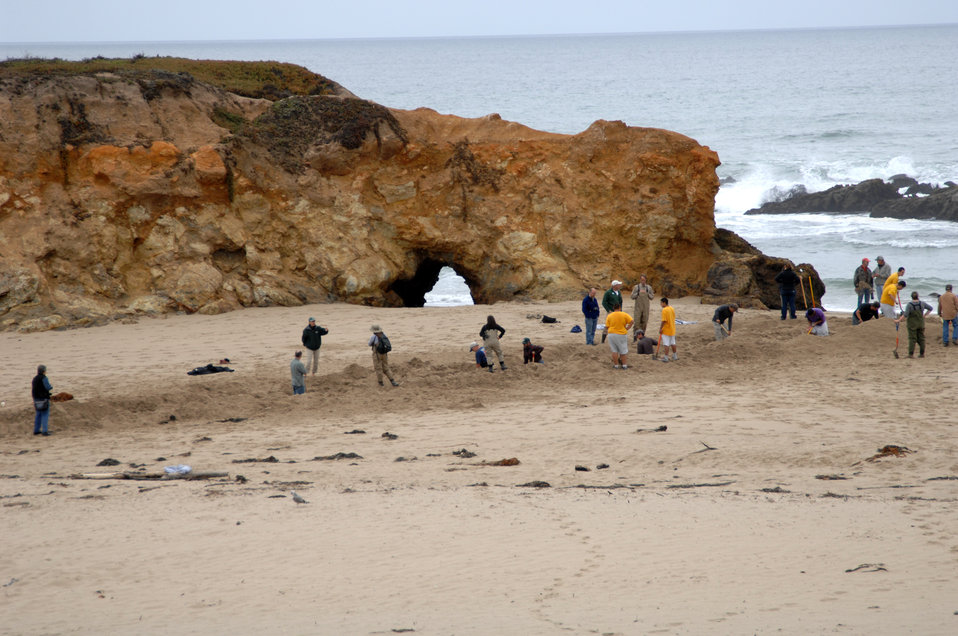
Pescadero Breach 10